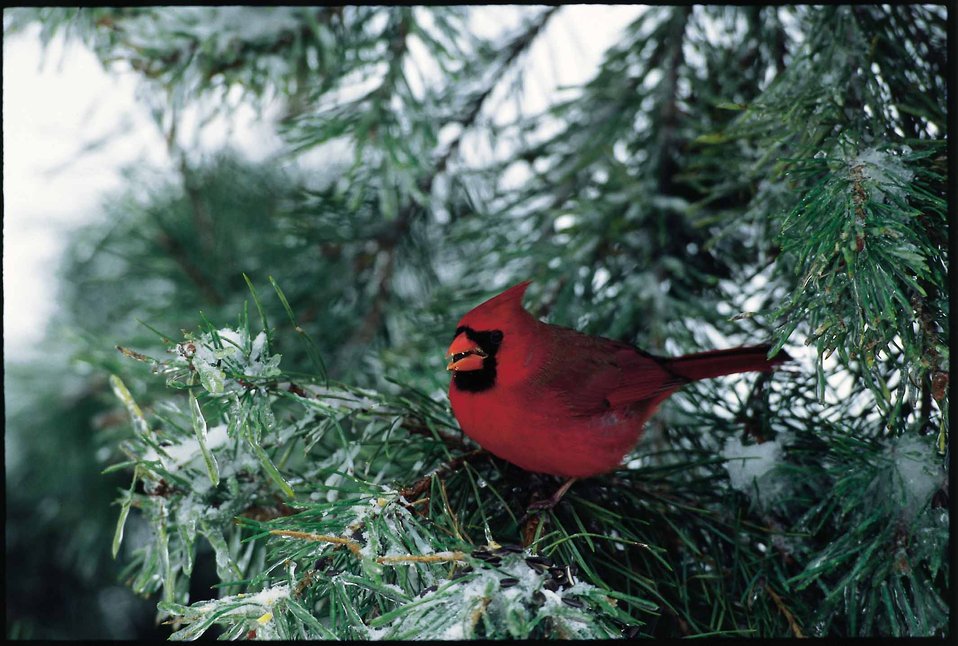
Cardinal in a conifer in a backyard.